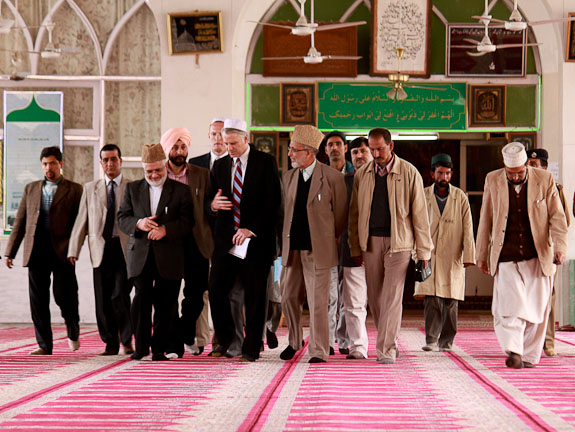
Ambassador Roemer Visits Jammu and Kashmir

U.S. Ambassador to India Timothy J. Roemer visits Jammu and Kashmir, March 17-18, 2011, to engage and listen to the people and connect with the youth of the state.